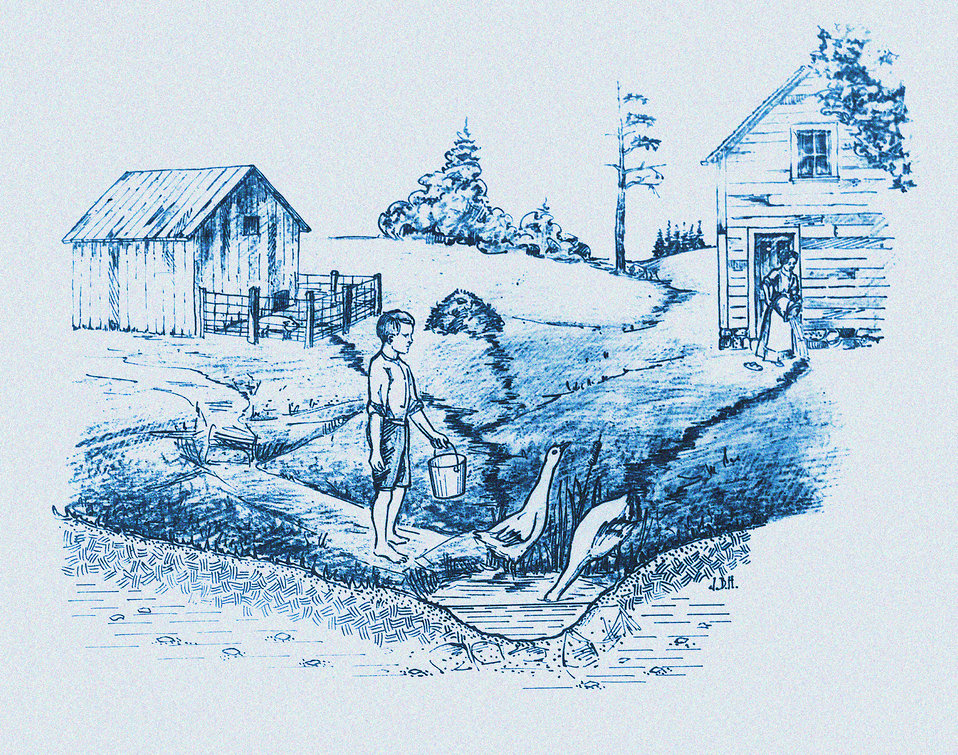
This historic diagram, which had been digitally enhanced and colorized, depicted sources of contamination that could affect a spring used as a farm's potable water supply. Published in 1915, this was one of a series of instructional drawings used by the Minnesota Board of Health to train its state public health workers. Note the woman pouring waste water into the yard outside the home, the waste pile between the home and barn, and the barn itself, all sources of contaminants that were shown draining into the spring water supply.